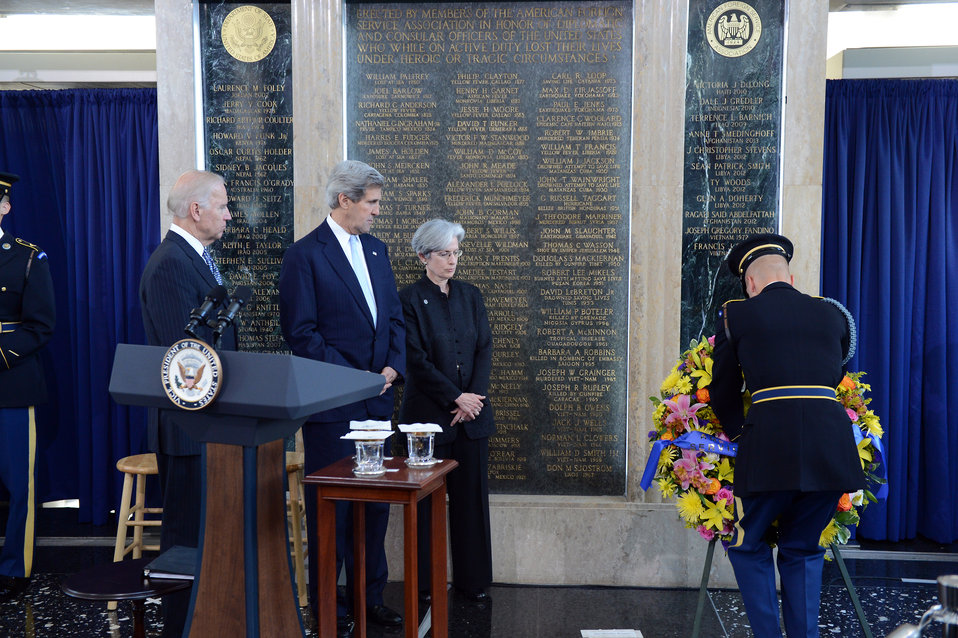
Secretary Kerry, Vice President Biden, and AFSA President Johnson Honor Fallen Foreign Affairs Colleagues

U.S. Secretary of State John Kerry, U.S. Vice President Joseph Biden, and American Foreign Service Association (AFSA) President Susan R. Johnson honor foreign affairs colleagues who have lost their lives while serving overseas in the line of duty or under heroic or other inspirational circumstances, at the AFSA Memorial Plaque Ceremony at the U.S. Department of State in Washington, D.C., on May 3, 2013.